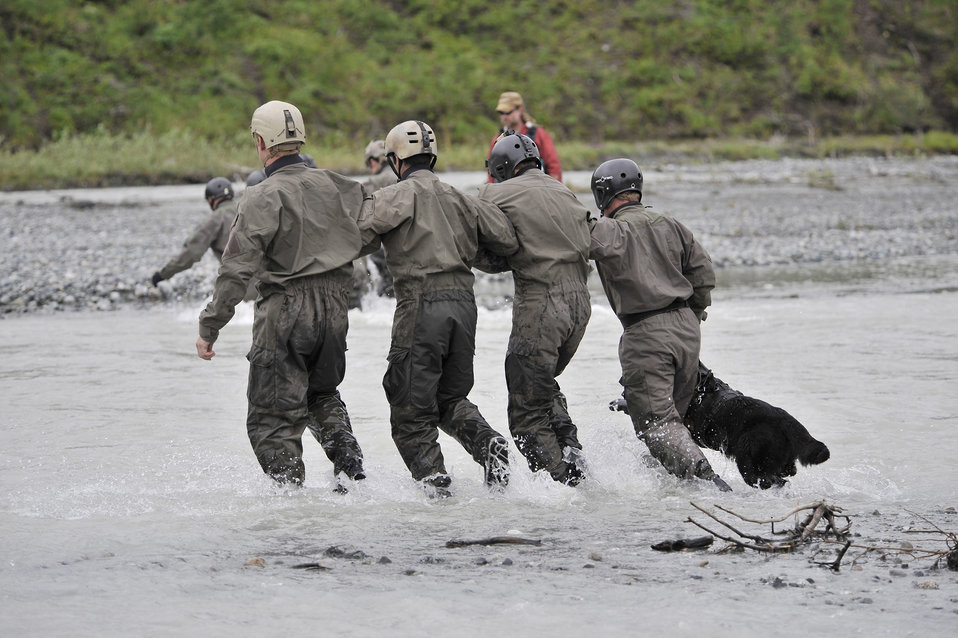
Navy SEALs train during Northern Edge 2009

A team of Navy SEALs conduct a river crossing exercise during Northern Edge 2009 June 17 at Fort Wainwright, Alaska. Northern Edge is a large-scale exercise hosted in Alaska to improve command, control and communications between the armed services. The West Coast-based SEALs are training for overseas operations.